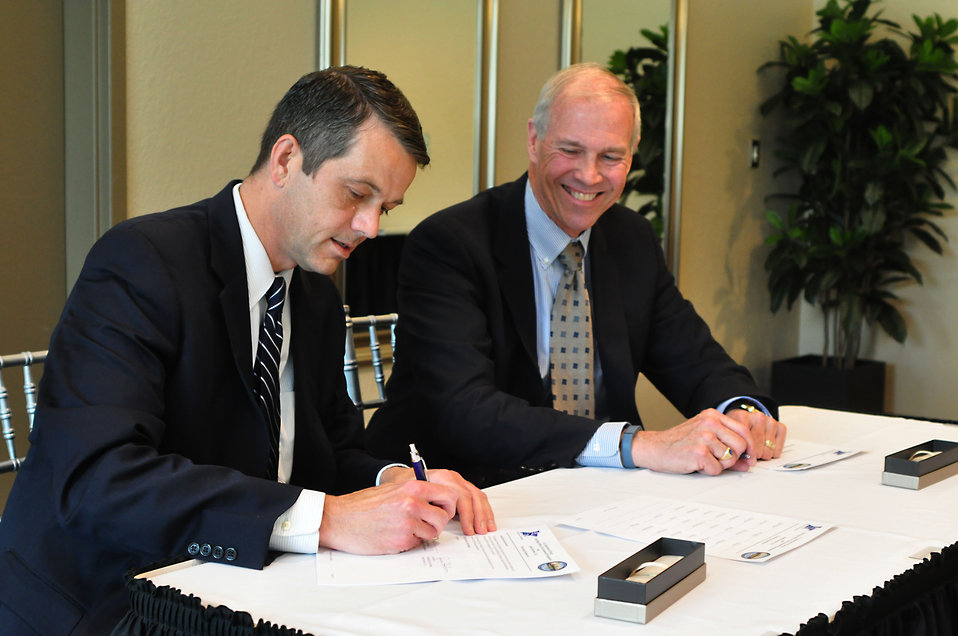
DOE and Isotek Partnering Agreement Signing 2014 Oak Ridge

14-046 DOE photo Lynn Freeny 4-8-2014 L to R Mark Whitney, Manager Oak Ridge Office of Environmental Management Department of Energy and James J. Bolon President and General Manager Isotek Systems, LLC Oak Ridge Tennessee